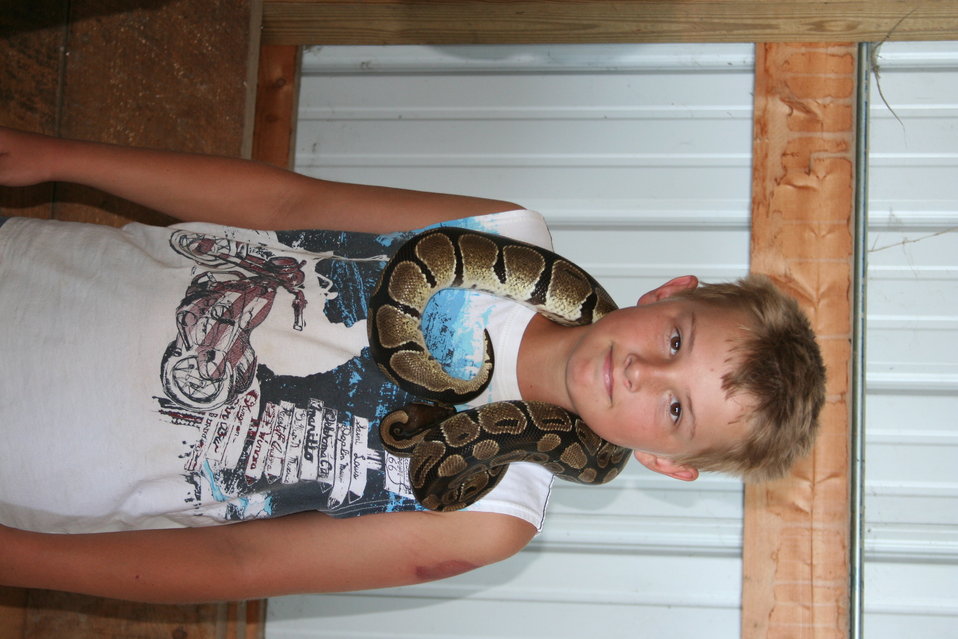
2011 Huron Prairie Fest